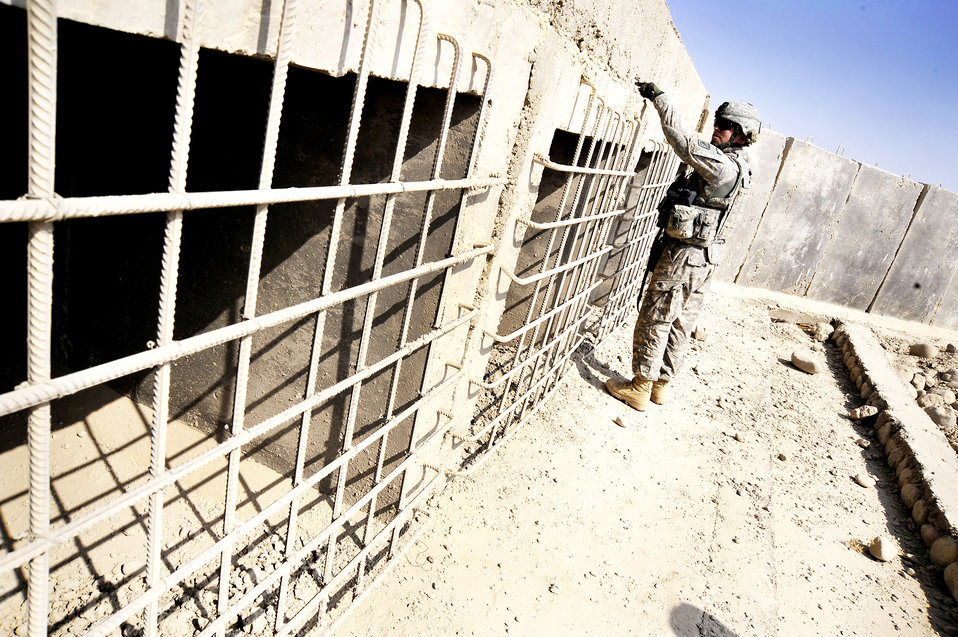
Air Force engineers help keep Afghan roads safe for travel

Capt. Rick Vermillion inspects a bridges for improvised explosives devices, damages, or traces of tampering Oct. 23, 2009, in Zabul Province, Afghanistan. The inspections provide safety to the people of Zabul as well as coalition forces while traveling. Captain Vermillion is an engineer assigned to Provincial Reconstruction Team Zabul.